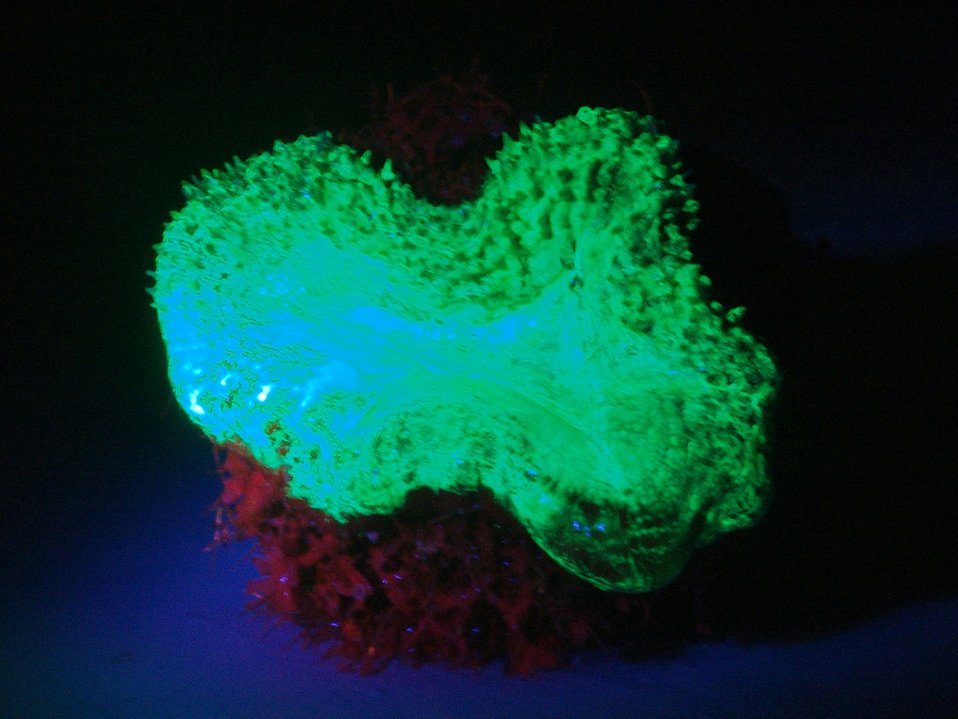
Mussa angulosa, a single polyp, is showing green fluorescence. This sample was found at 60 to 70 foot depth.